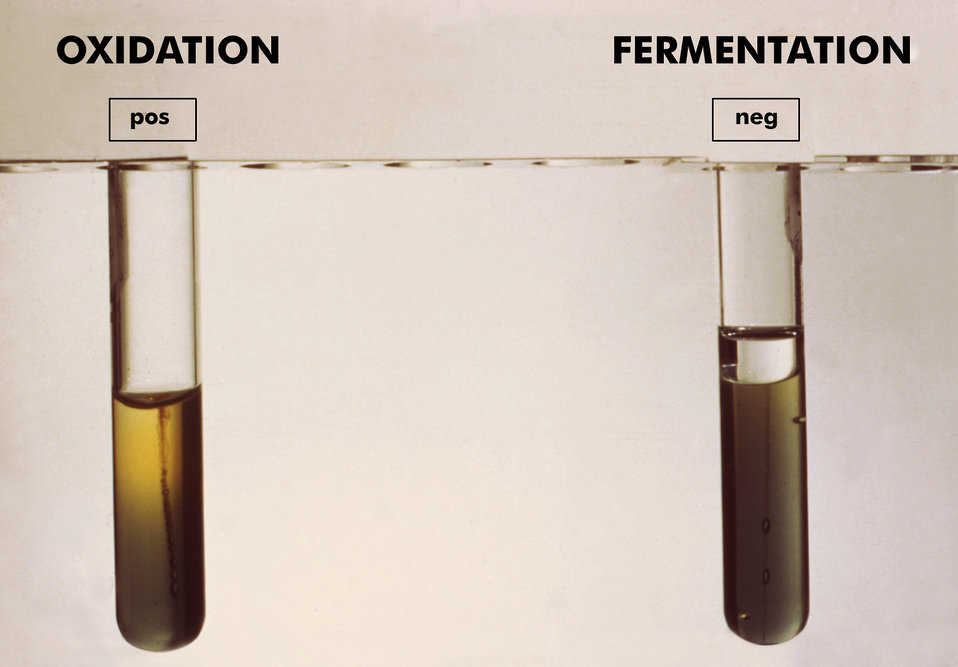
These Enterobacteriaceae cultures show positive oxidation, and negative fermentation reactivity in glucose medium.